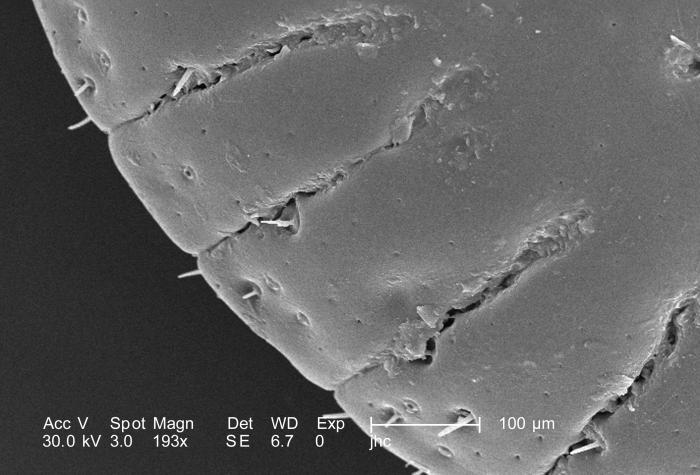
Under a magnification of 193X, four times that of PHIL 9960, this scanning electron micrograph (SEM) depicted a dorsal view of an unidentified male Dermacentor sp. tick found upon a cat in the suburbs of Decatur, Georgia, which measured approximately 3.5mm from its gnathosoma (i.e., capitulum), which is where its mouthparts are located, to the distal abdominal margin. Note here, and more so in PHIL 9959 and 9960, that the entire dorsum of this tick's abdomen is covered by its tough 'scutum', or 'shield', categorizing it as a male. In female Ixodid-species ticks, the scutum only partially covers the dorsal abdomen. Seen clearly in this image are the ridges that run along the distal abdominal border, and are known as 'festoons', and are one of the identifying characteristics used to classify hard, or Ixodid ticks.